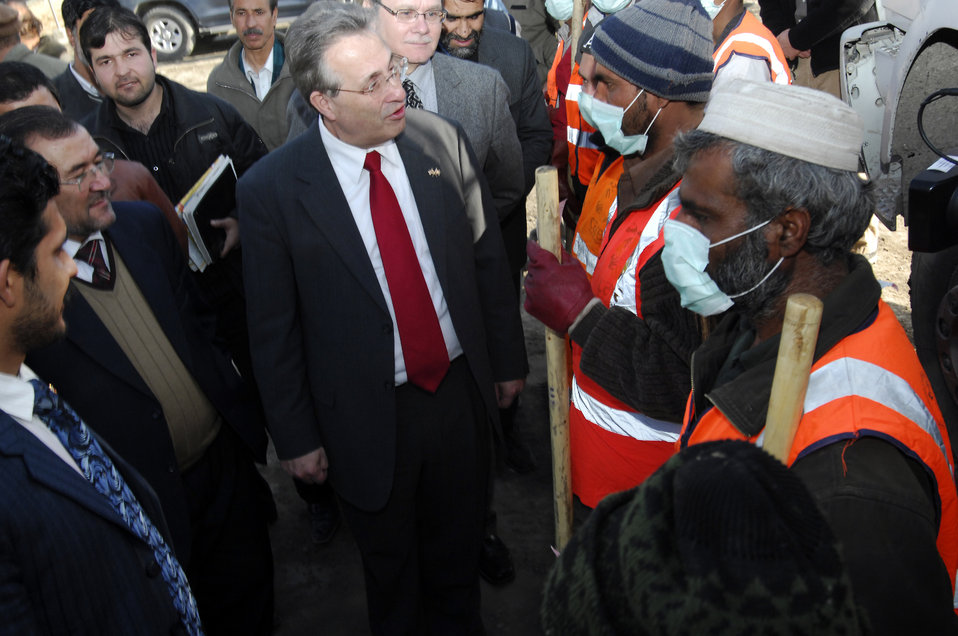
Care86